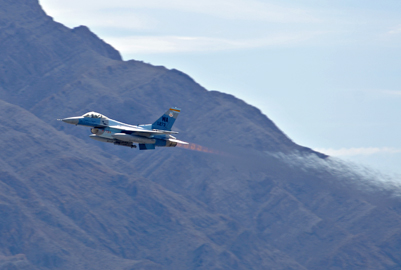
Red Flag 11-2 provides combat experience

An F-16 Fighting Falcon from the 64th Aggressor Squadron, Nellis Air Force Base, Nev., takes off from the flightline during the first day of Red Flag 11-2 Jan. 24, 2011, at Nellis AFB. Red Flag is a combined exercise that provides a realistic, combat-training environment to the U.S. and its allies.